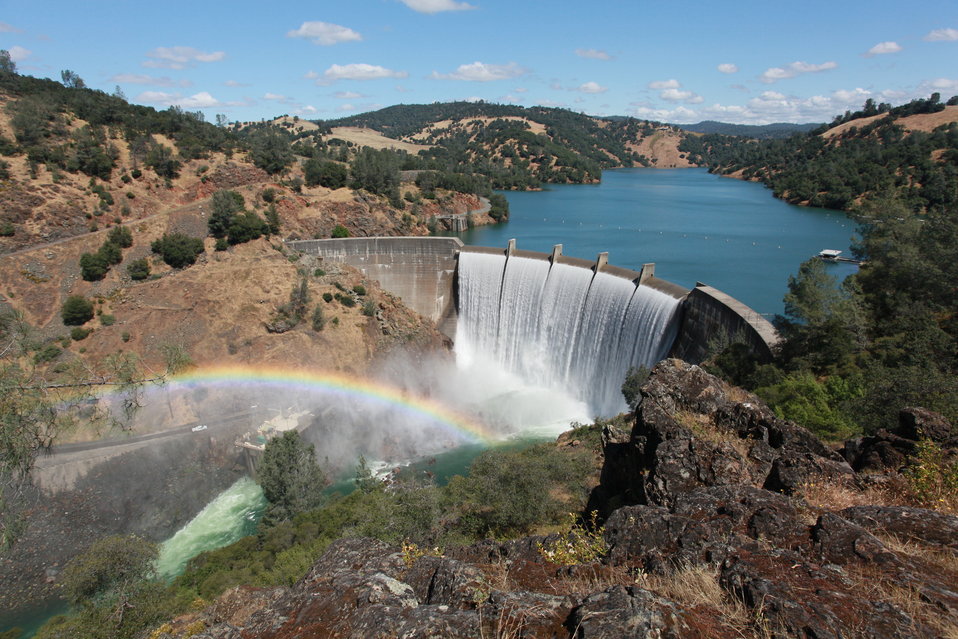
Englebright Lake

Englebright Dam, shown here June 10, 2010, is located between Grass Valley and Marysville, Calif., in Nevada and Yuba counties. Completed by the U.S. Army Corps of Engineers Sacramento District in 1941, the dam was authorized by Congress for the storage of hydraulic gold mining debris on the Yuba River. The concrete arch dam spans 1,142 feet across and is 260 feet high. Englebright Lake is 9 miles long with a surface area of 815 acres, an elevation of 527 feet and 24 miles of shoreline. The lake and dam are managed by the Sacramento District.